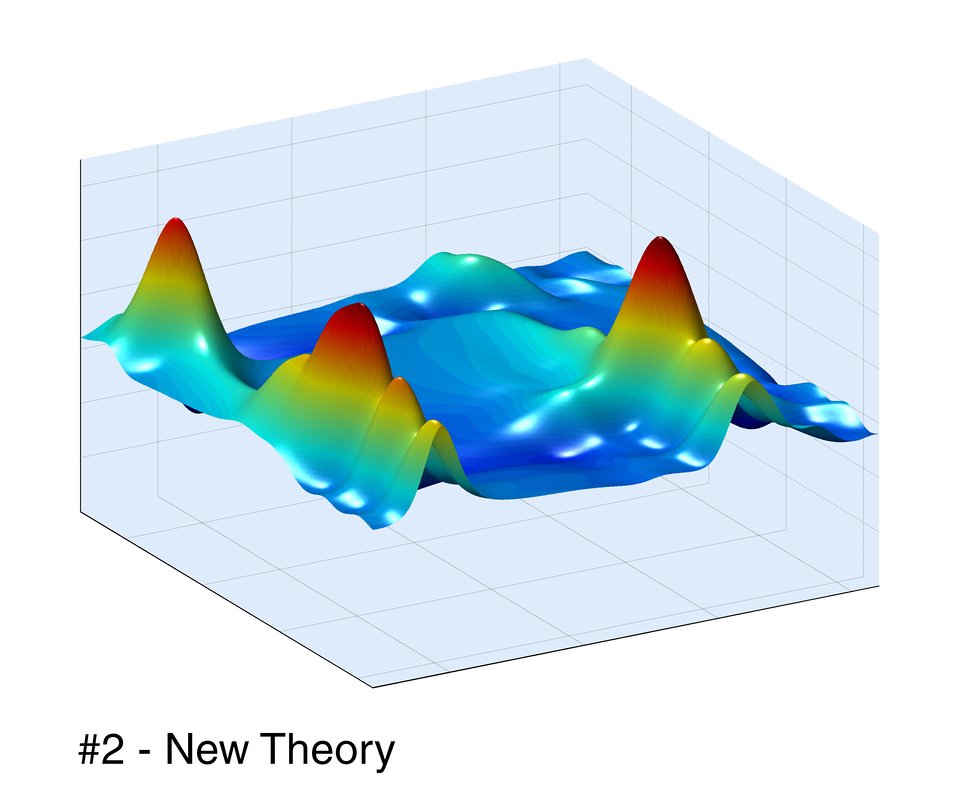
Semiconductors, selective behavior

Physicists at JILA have confirmed subtle 'collective behavior' among electronic structures in semiconductors, research that may help improve the design of optoelectronic devices.